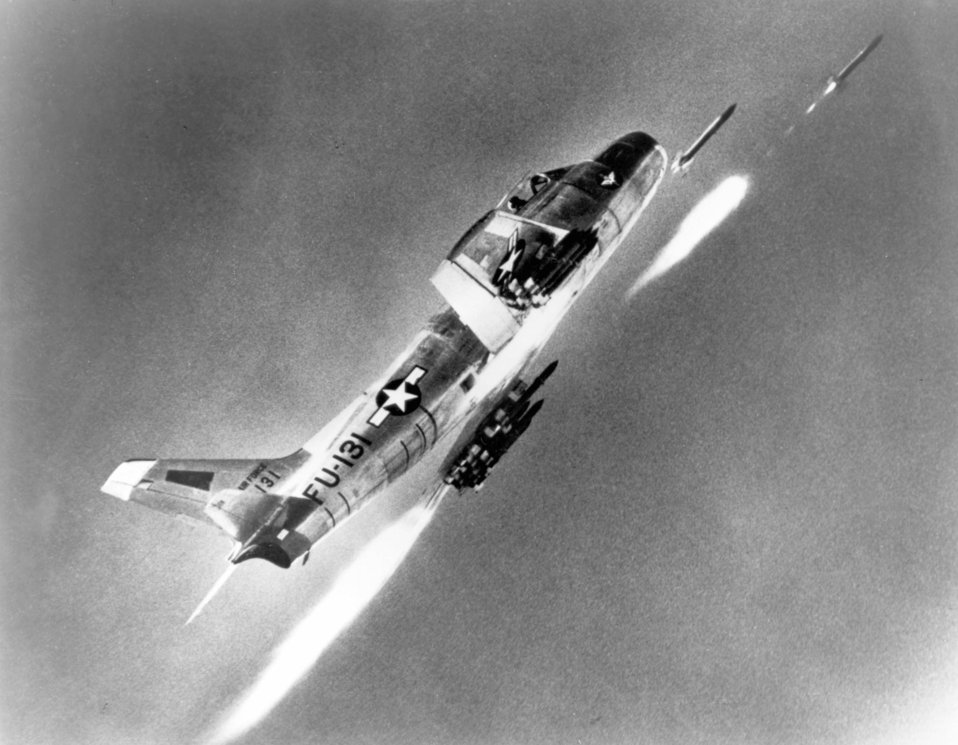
F-86 Sabre

1940's -- A North American Aviation Air Force F-86 Sabre jet launches 5-inch rockets equipped to carry 16 HVAR rockets externally on wings and can also carry bombs or combinations of bombs and rockets.